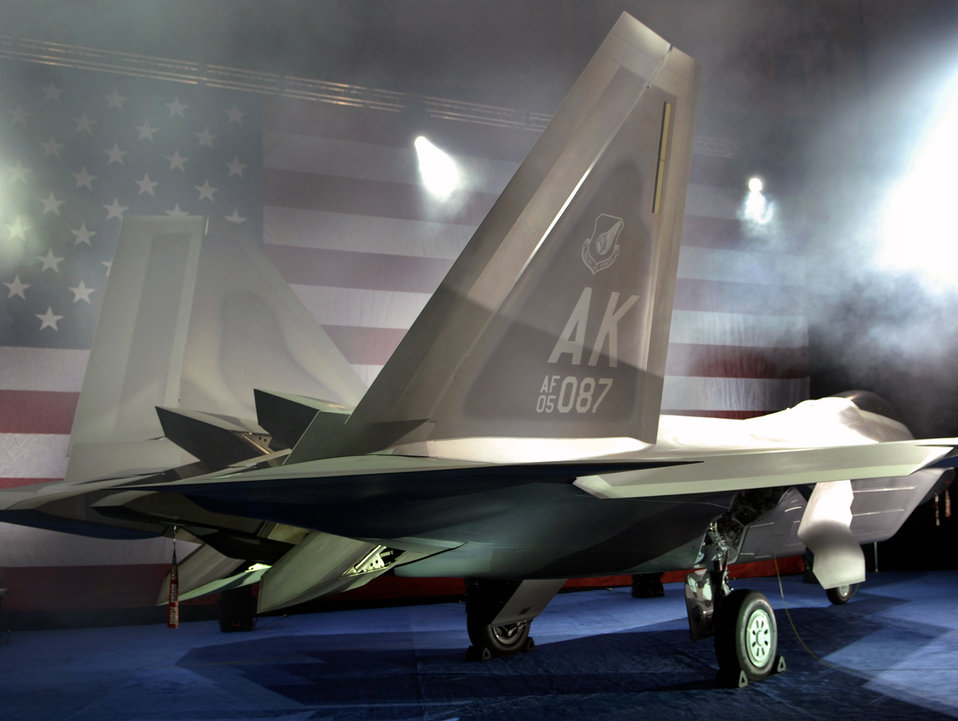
First F-22 bound for Pacific unveiled

Representatives from the Air Force and Lockheed Martin gathered to see the roll-out of Pacific Air Forces' first F-22 Raptor Feb 12 at Marietta, Ga. This F-22 is the first of several that will be assigned to PACAF at Elmendorf Air Force Base, Alaska. Significant advances in cockpit design and sensor fusion improve the pilot's situational awareness.